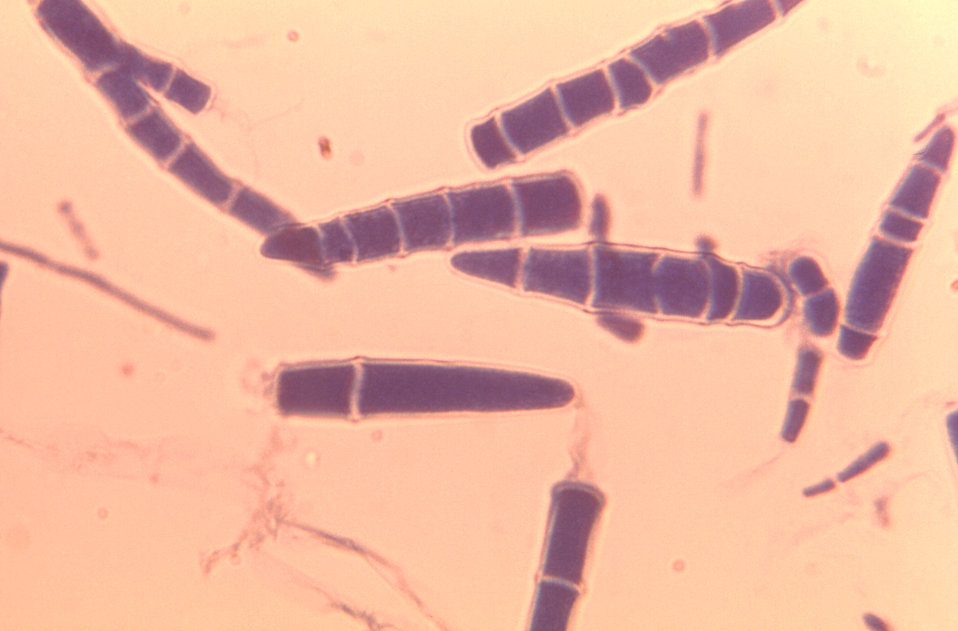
Under a high magnification of 970X, this photomicrograph depicted some of the ultrastructural features of numerous oblong-shaped Microsporum gypseum macroconidia from what is known as a red, powdery, mutant strain.